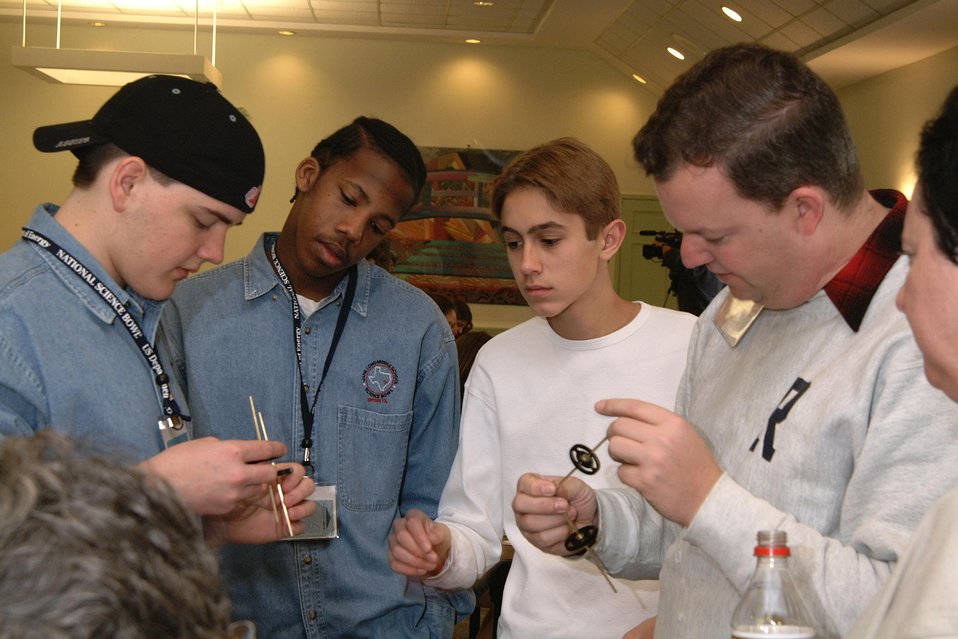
TEAM FROM JANE LONG MIDDLE SCHOOL, BRYAN, TX COLLABORATING ON BUILDING A MODEL SOLAR CAR.

THE DEPARTMENT OF ENERGY SPONSORED THE FIRST NATIONAL MIDDLE SCHOOL SCIENCE BOWL ON MARCH 21-24, 2002 IN WASHINGTON, DC AT DOE HEADQUARTERS FORRESTAL BUILDING. ON MARCH 23RD THE COMPETITION INCLUDED A MODEL SOLAR CAR RACE HELD AT THE NATIONAL 4-H CONFERENCE CENTER, CHEVY CHASE, MD. THE MODEL CARS WERE DESIGNED AND CONSTRUCTED BY THE TEAM MEMBERS.